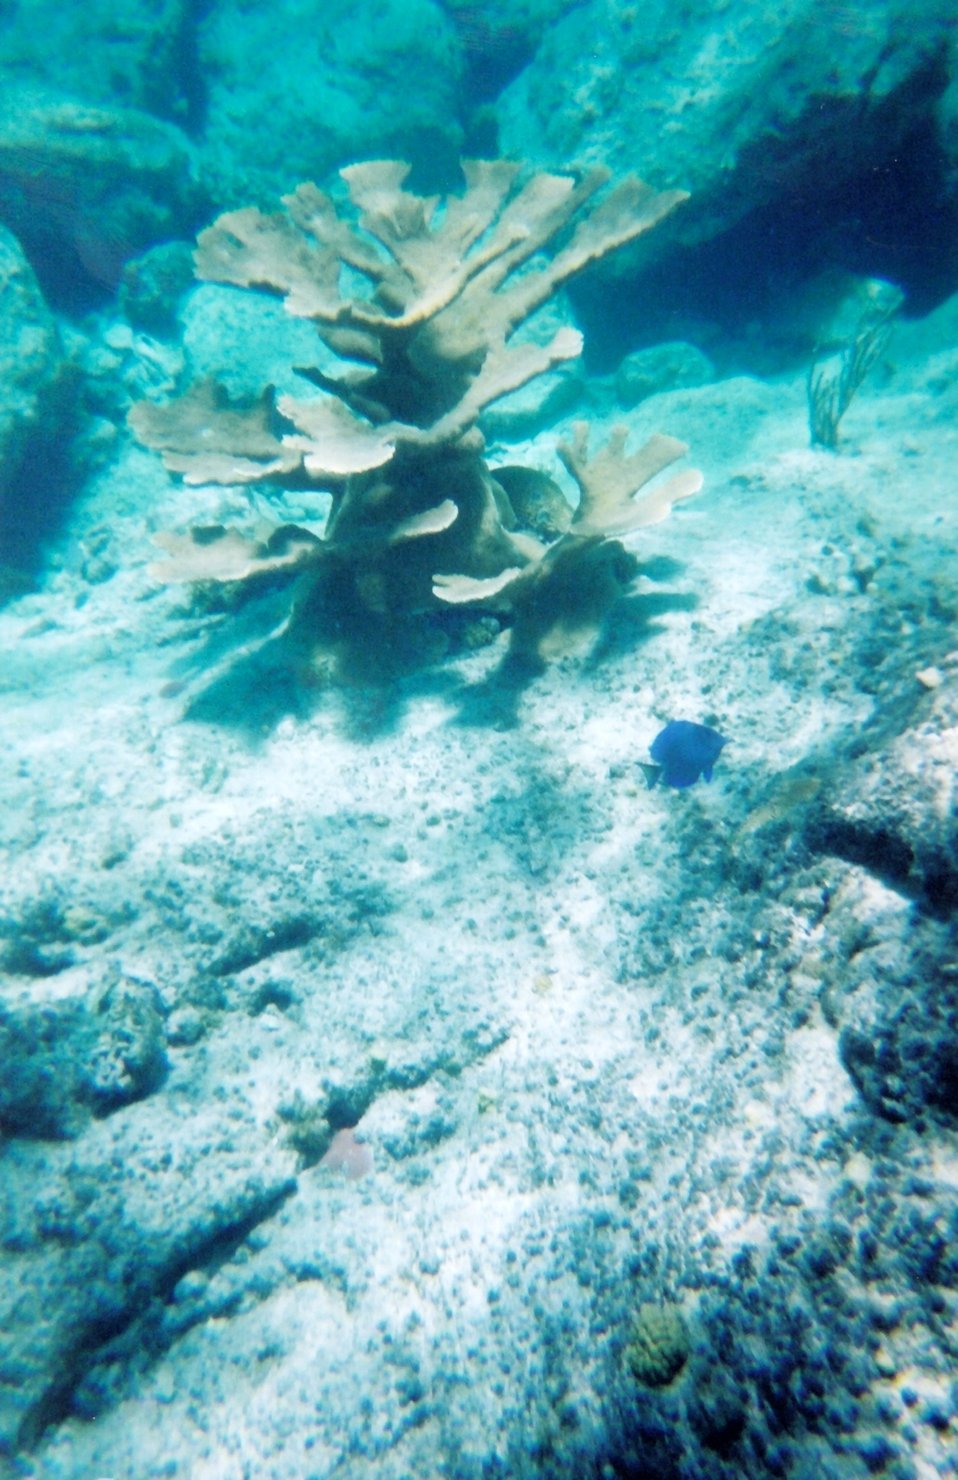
Snorkeling views.